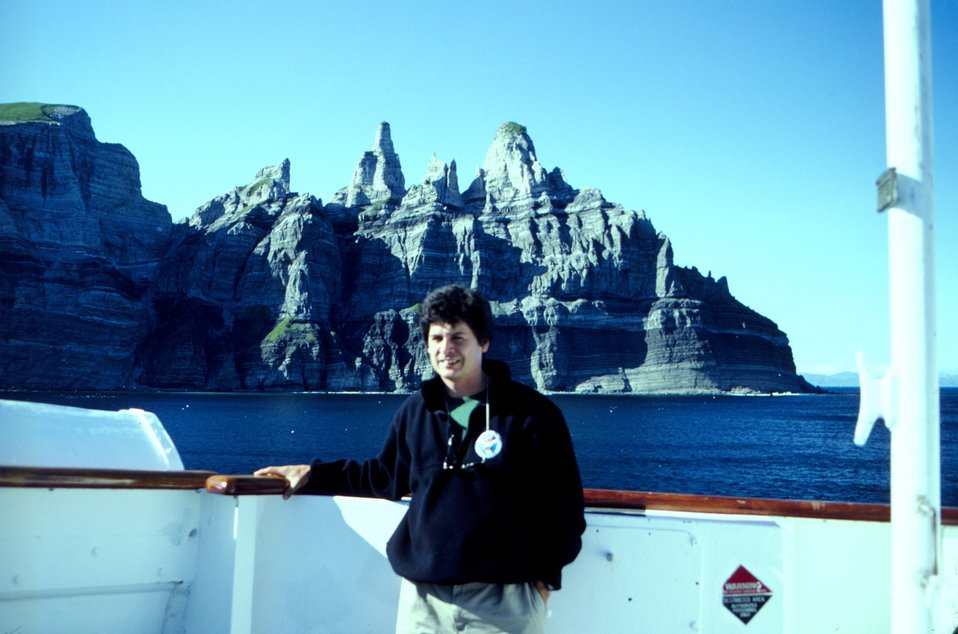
Dave Sinson, NOAA Office of Coast Survey hydrographer, on the NOAA Ship RAINIER at Castle Cape, Alaska.